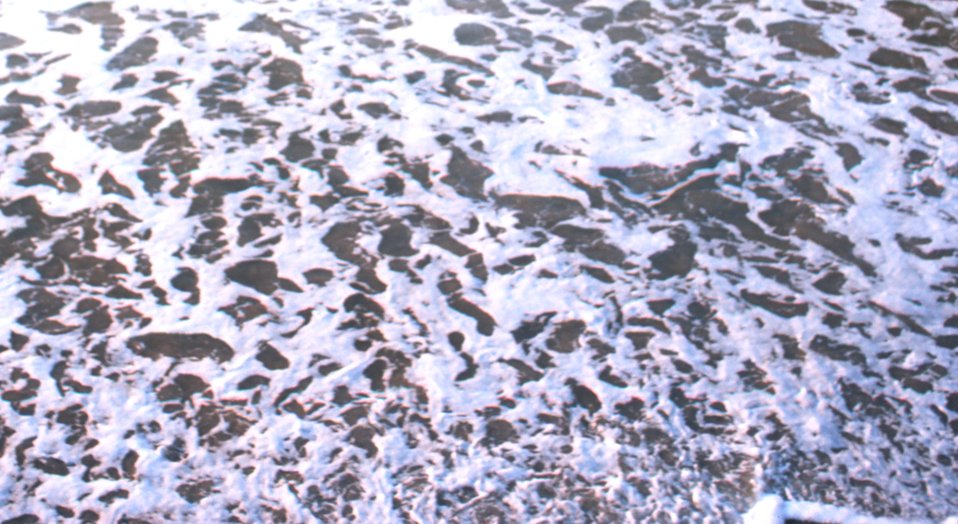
Patterns in the surf at Edwin S. Taylor Fishing Pier